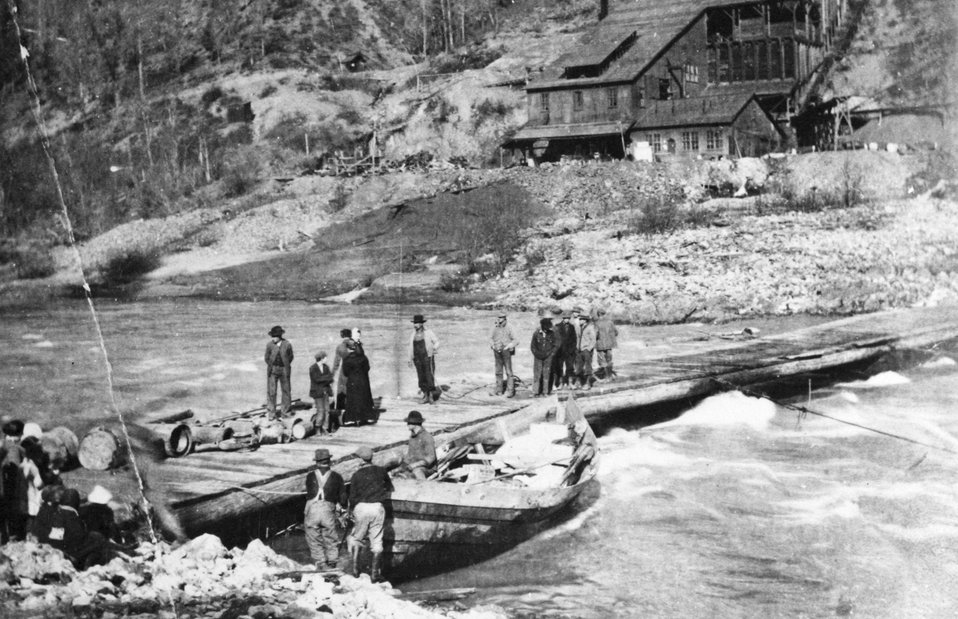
Almeda mine